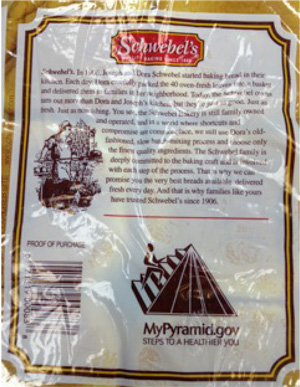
RECALLED – Golden Rich Buns with Honey

September 16, 2013 – Product Recall – Schwebel Baking Company Voluntarily Recalls Schwebel's Golden Rich Buns With Honey Due to Undeclared Eggs.